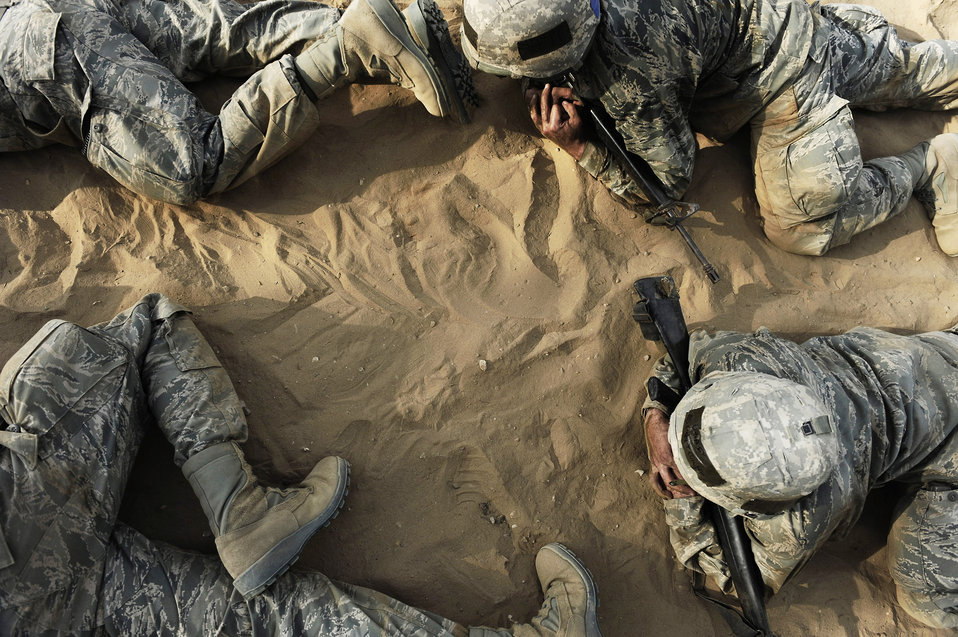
Trainees conquer the BEAST

Basic trainees low craw through a tactical course at the Basic Expeditionary Airman Training course Sept. 2, 2009, at Lackland Air Force Base, Texas.